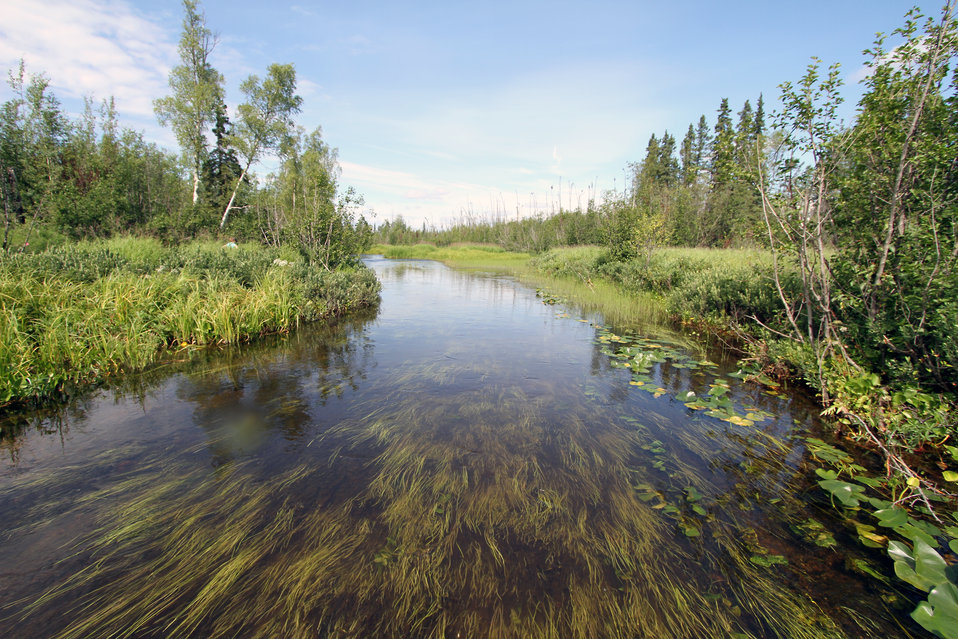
Fish Creek

downstream of Big Lake in the Mat-Su Borough, Alaska. USFWS/Katrina Mueller